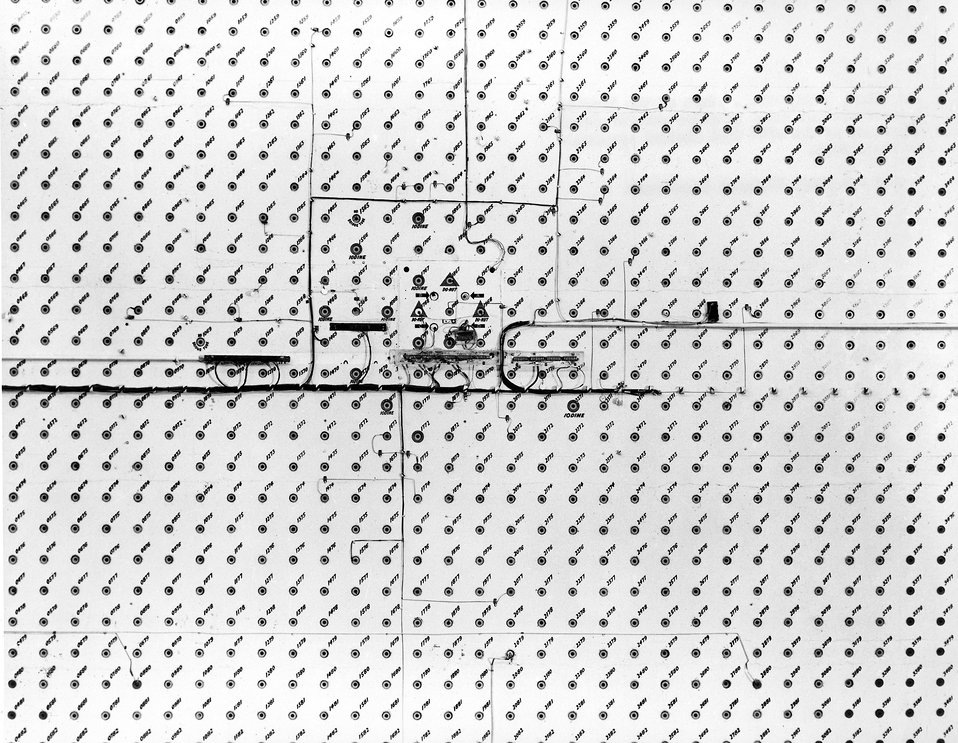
Part of the loading face of the Oak Ridge graphite reactor showing a portion of the 1248 fuel chemical openings in the shield.